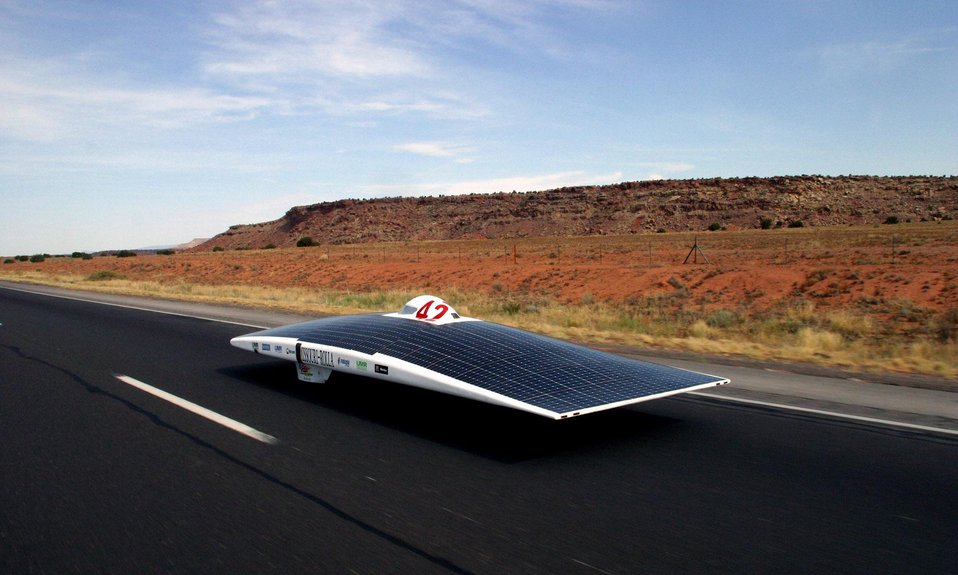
UNIVERSITY OF MISSOURI-ROLLA ALONG INTERSTATE 40 TOWARD GALLUP, N.M. ON THE EIGHT DAY.

THE AMERICAN SOLAR CHALLENGE, THE LONGEST SOLAR CAR RACE IN THE WORLD, IS A DOE SPONSORED EDUCATIONAL EVENT IN WHICH TEAMS COMPETE TO BUILD AND RACE SOLAR-POWERED CARS. TWENTY UNIVERSITIES PARTICIPATED IN THIS YEAR'S EVENT WHICH STARTED IN CHICAGO, ILLINOIS ON JULY 13 AND FOLLOWED ROUTE 66 FOR 2300 MILES TO CLAREMONT, CALIFORNIA, ENDING ON JULY 23, 2003. THE UNIVERSITY OF MISSOURI-ROLLA WON FIRST PLACE, SETTING A RECORD FOR US SOLAR CAR RACING BY COMPLETING 2300 MILES IN 51 HOURS.